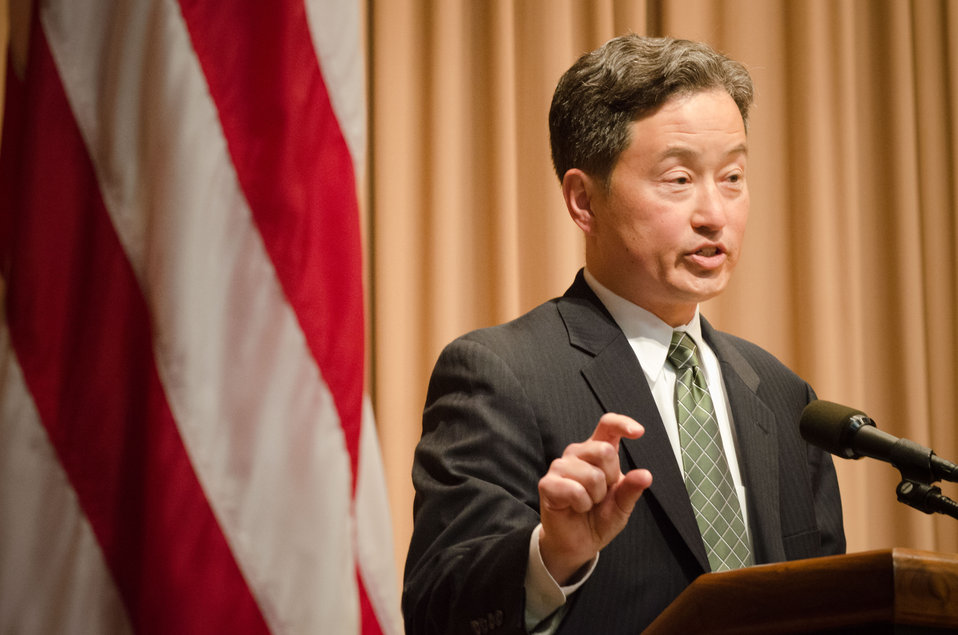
Agriculture Deputy Undersecretary, Food Safety Inspection Service Brian Ronholm offered closing remarks at the 2012 Asian Pacific American Heritage Observance “Striving for Excellence in Leadership, Diversity and Inclusion” at the U.S. Department of Agriculture in Washington, D.C. on Thursday, May 24, 2012.